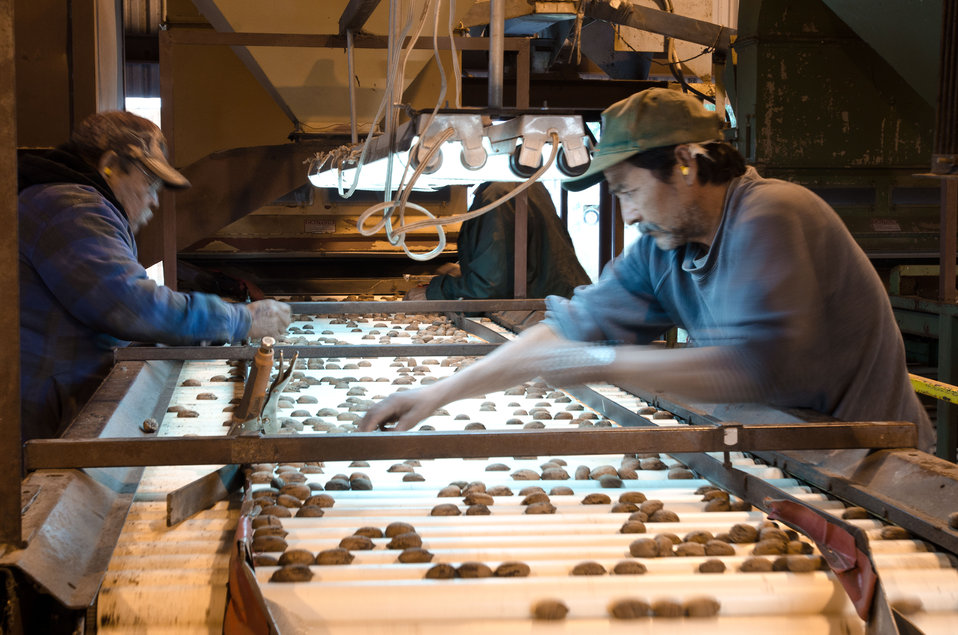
Teodoro Gamez (left) and Jesus Gomez (right) apply their keen eyes and fast hands to sort out any pecans that are less than perfect from the last load of this season's harvest at Arrowhead Farms of Crystal City, TX, on Friday, December 9, 2011, owned by Mr. Akram Mohammad, a pecan farmer since 2005. The 719 acre farm with 10,000 trees, features some orchards with underground micro irrigation system that feeds water to the roots of 4,380 pecan trees on 146 acres. Mr. Mohammad said, “USDA (U.S. Department of Agriculture) was essential to my business and trees surviving the recent exceptional drought. The trees were stress free thanks to underground micro-irrigation. This is essential to the future growth of Texas agriculture and good for America.” U.S. Department of Agriculture’s (USDA) Environmental Quality Initiative Program (EQIP) awarded Mr. Mohammad a $130,000 grant in 2008. He provided $26,000 for the balance of the $156,000 total cost to install a 146-acre underground micro-irrigation for 4,380 trees.